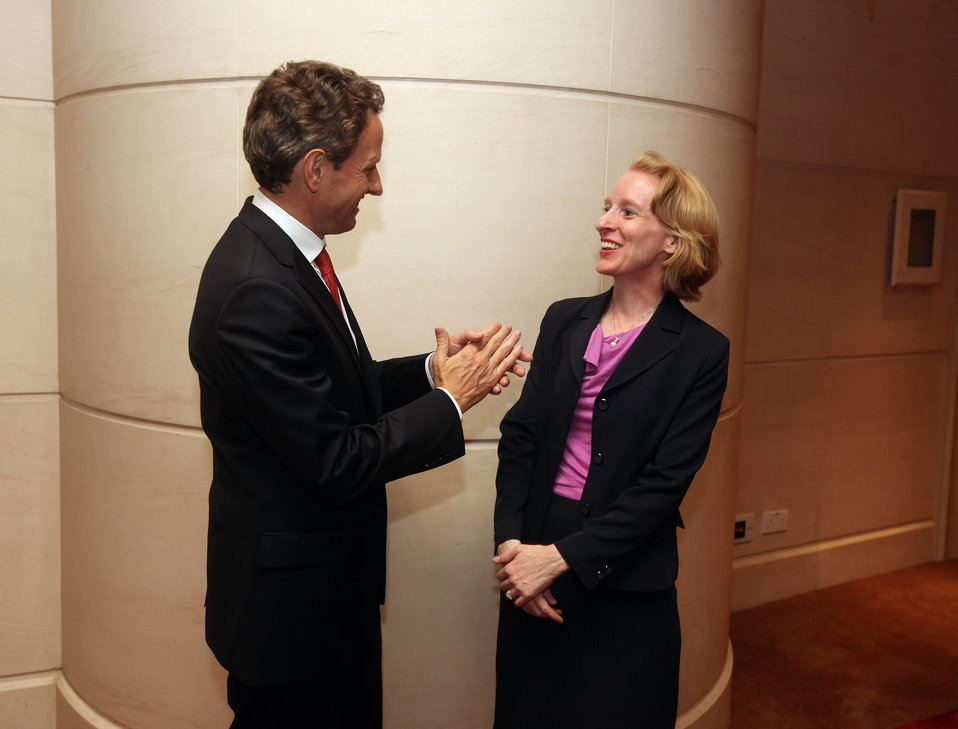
SandED 5/25/10

Secretary Geithner spoke with U.S. Embassy spokesperson Susan Stevenson after his press confrence with Secretary Clinton.